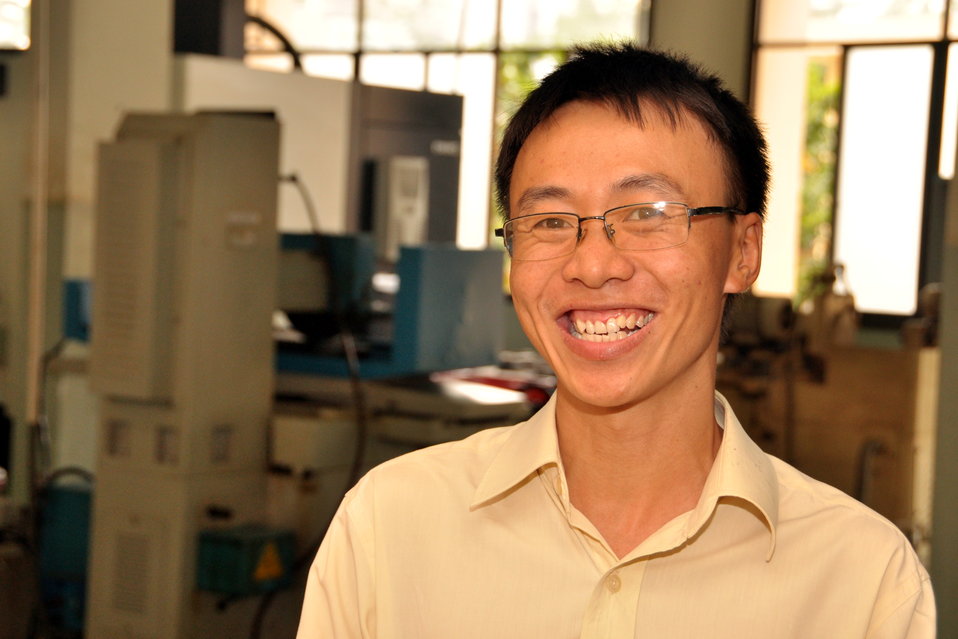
Ho Chi Minh Vocational College of Technology

Vu The Manh, lecturer of Mechanical Engineering Faculty at the Ho Chi Minh Vocational College of Technology

Photo: January 11, 2013, Richard Nyberg @USAIDVietnam